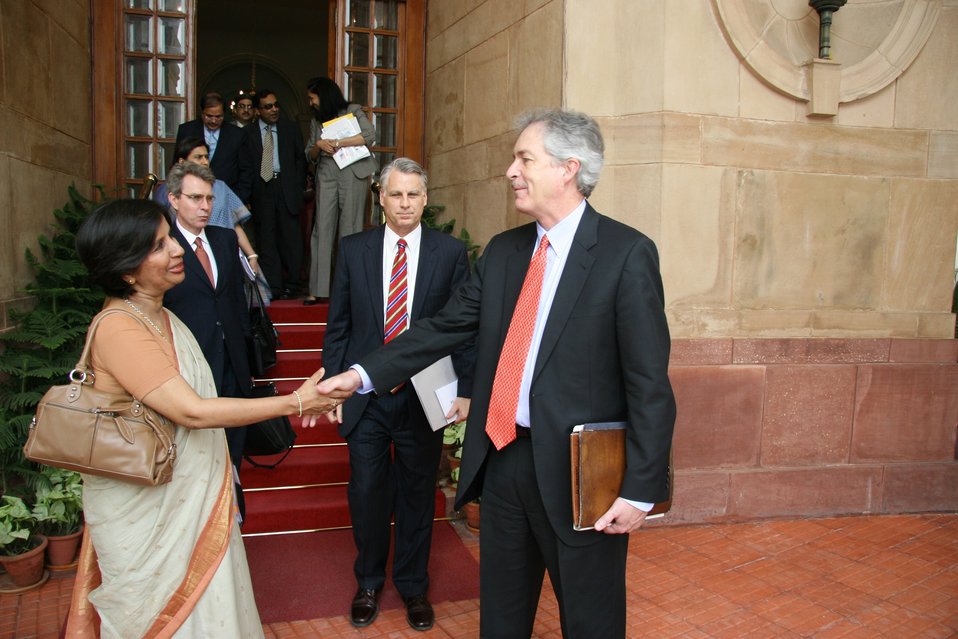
Under Secretary Burns Bids Farewell to Indian Foreign Secretary Nirupama Rao

Under Secretary for Political Affairs William J. Burns bids farewell to Indian Foreign Secretary Nirupama Rao in New Delhi, India, on May 24, 2010.